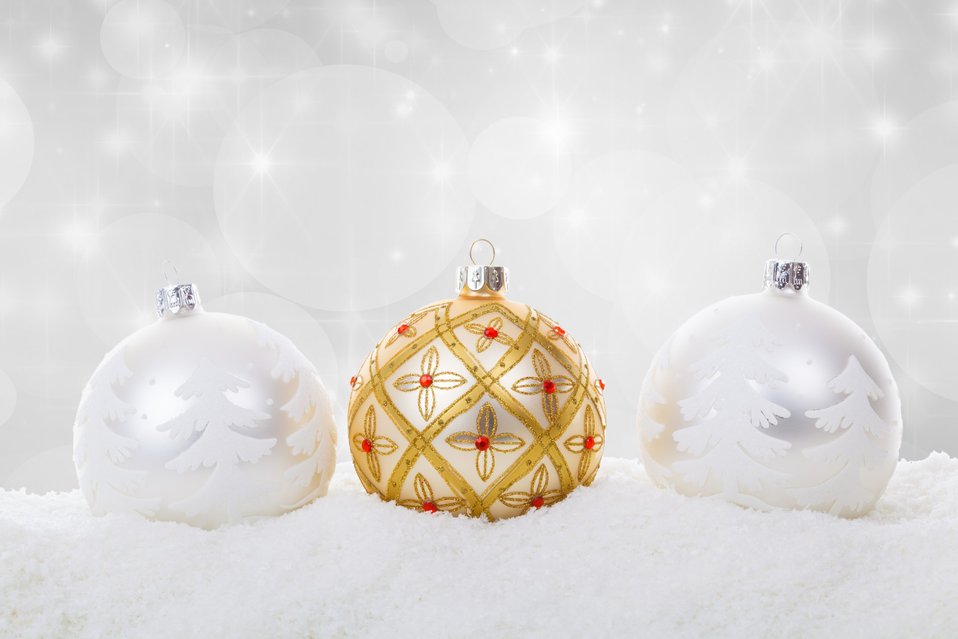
Christmas balls in snow

Three christmas baubles in snow on sparkling background.